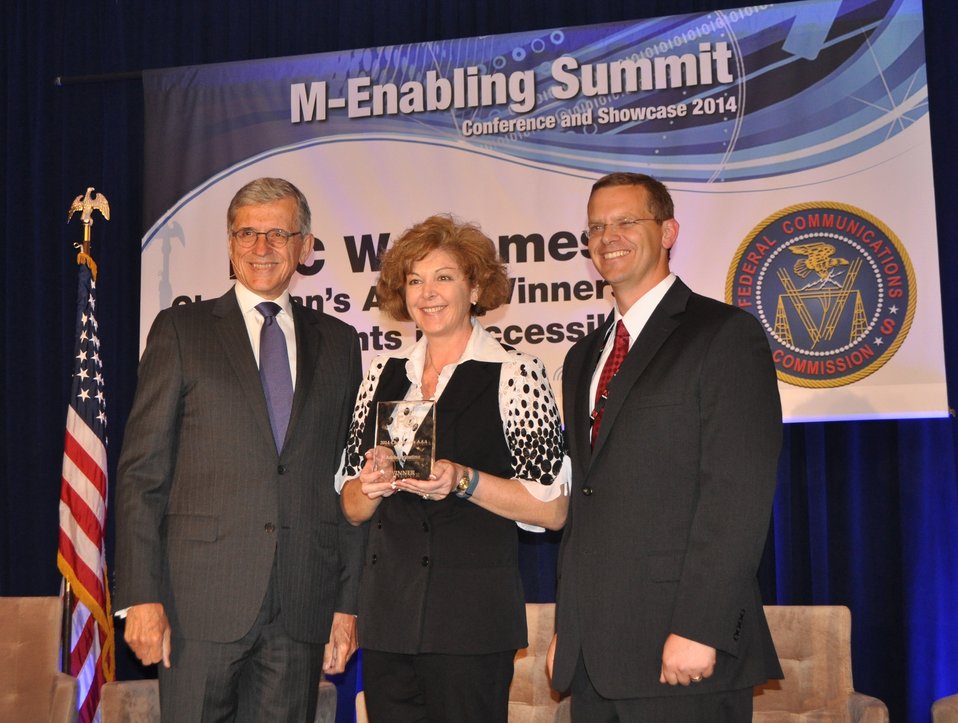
6.9.2014 Third Annual Chairman’s Awards for Advancement in Accessibility

Winner for the category of Closed Captions: Adobe Primetime: Jennifer Cooper and Andrew Kirkpatrick accepting this award.